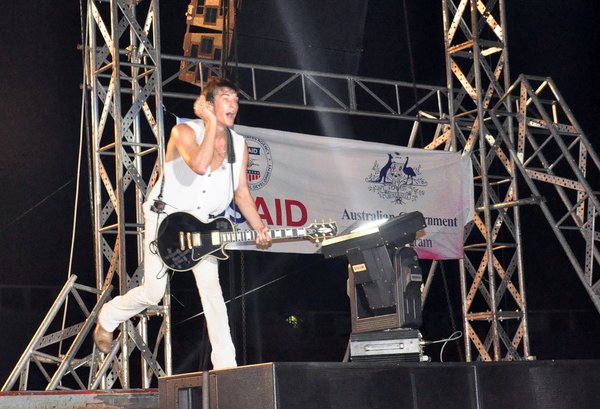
USAID, MTV EXIT concert series in Vietnam, 2010.

The Click Five performs in Ho Chi Minh City on April 17 as part of the USAID, MTV EXIT concert series.